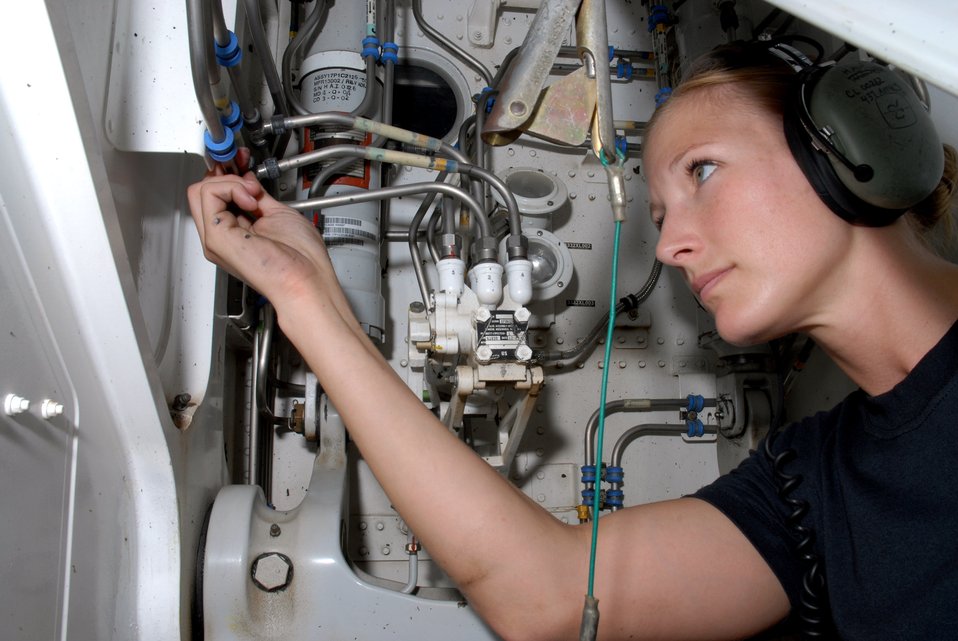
Team effort sets airlift standard

Staff Sergeant Sarah E. Hall, 8th Expeditionary Air Mobility Squadron, inspects a C-17 Globemaster III nose landing gear wheel well to ensure there are no deficiencies here Oct. 8. Sergeant Hall is deployed from Charleston Air Force Base, S.C.